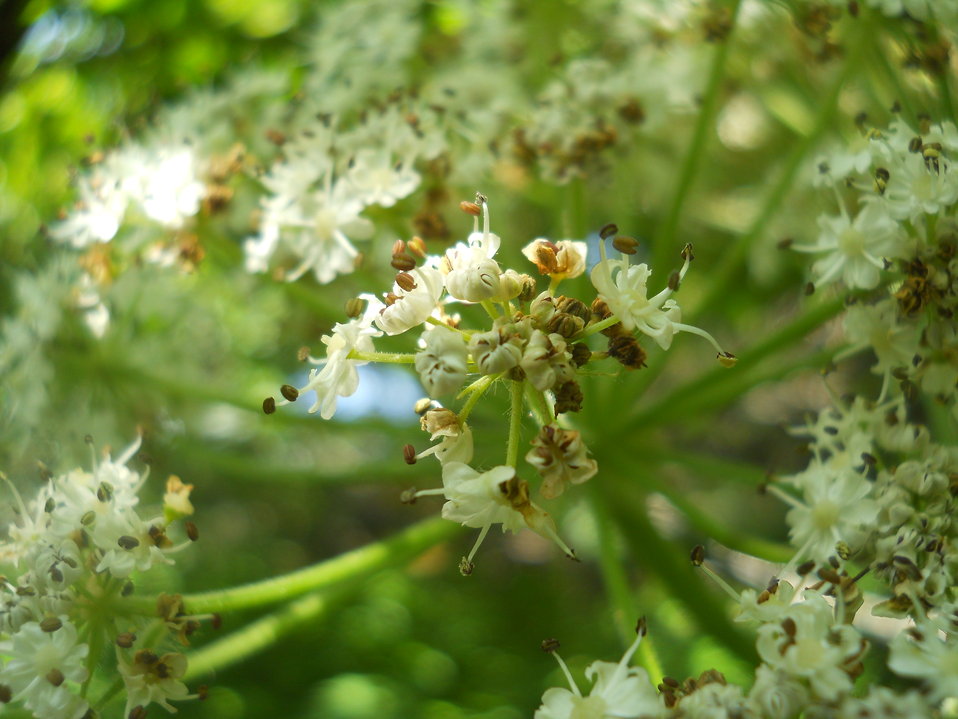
Pushki Up Close

Credit: USFWS
Photo taken by a Salmon Camp participant during a nature photography activity.

Source and Contact: Kodiak National Wildlife Refuge